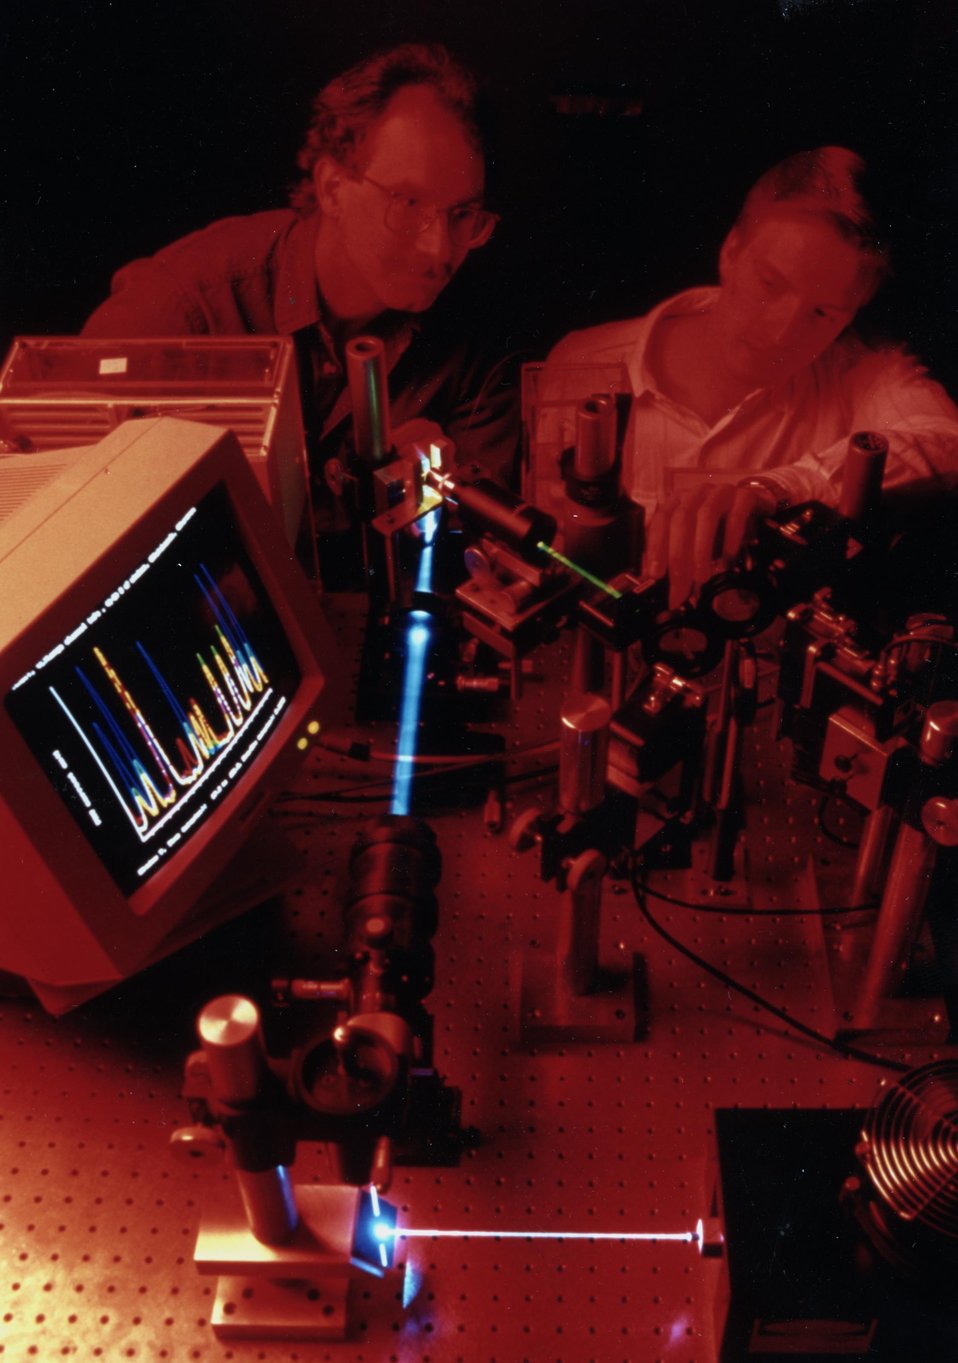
Hig-Speed DNA Sequencing. Researchers demonstrate a laser-based procedure for determining the sequence of bases in a DNA fragment during capillary electroscopes. c. 1991